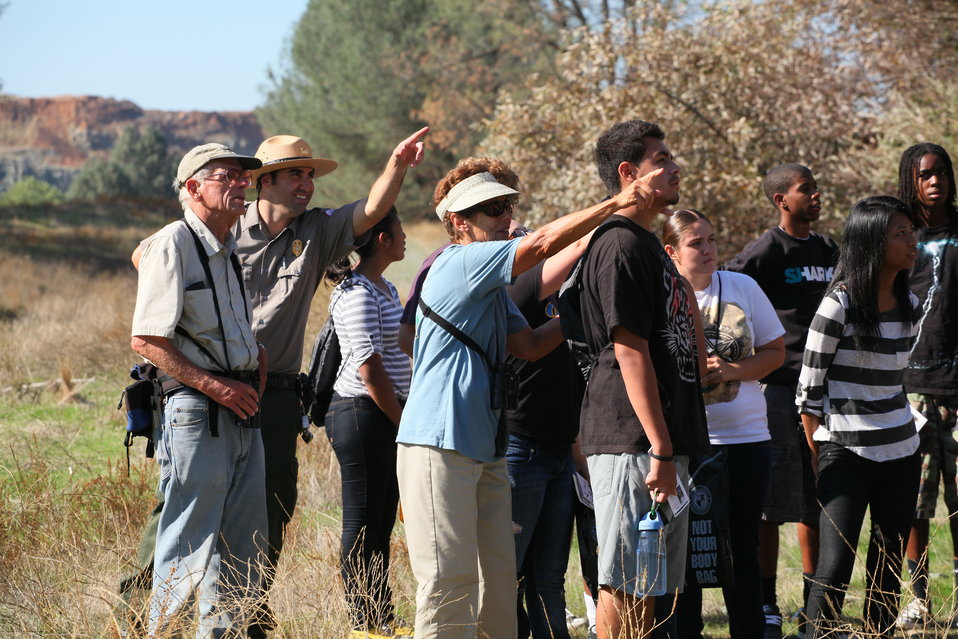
A river full of education

Dave Wagner (left) and Nan Ballot (center),with the Audubon Society, join park ranger Gary Basile (second from left), with the U.S. Army Corps of Engineers Sacramento District, point out a red tail hawk to students on a bird watching hike on the Calaveras River below New Hogan Dam, Valley Springs, Calif., Oct. 22, 2011. The students, from Stagg and Bear Creek high schools of Stockton, Calif., experienced real life learning through activities including water sampling, aquatic life samples, an underwater video camera and fish habitats as part of the Calaveras River Education and Appreciation Day. The U.S. Army Corps of Engineers Sacramento District helped host the event, in partnership with the U.S. Fish & Wildlife Service’s “Connecting People with Nature” program.